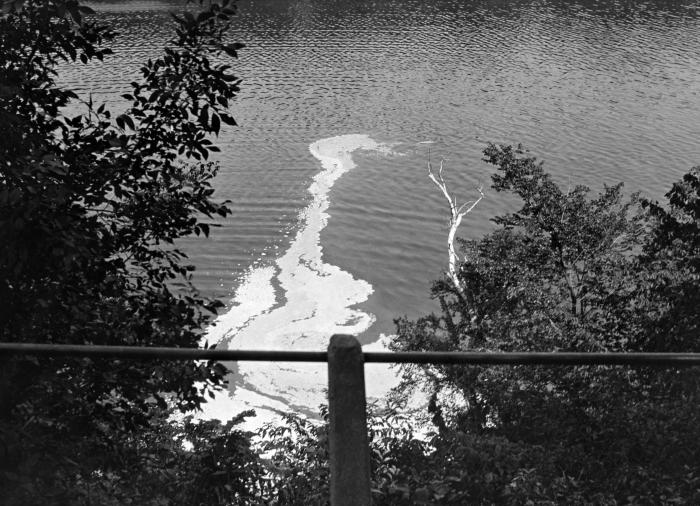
This historic photograph showed the East 38th Street sewer outlet emitting sewage into the Mississippi River in St. Paul. Minnesota. The pollution from the raw sewage was visible in the center of the image. This was the view from the river's west bank. The photograph was taken on July 29, 1929.